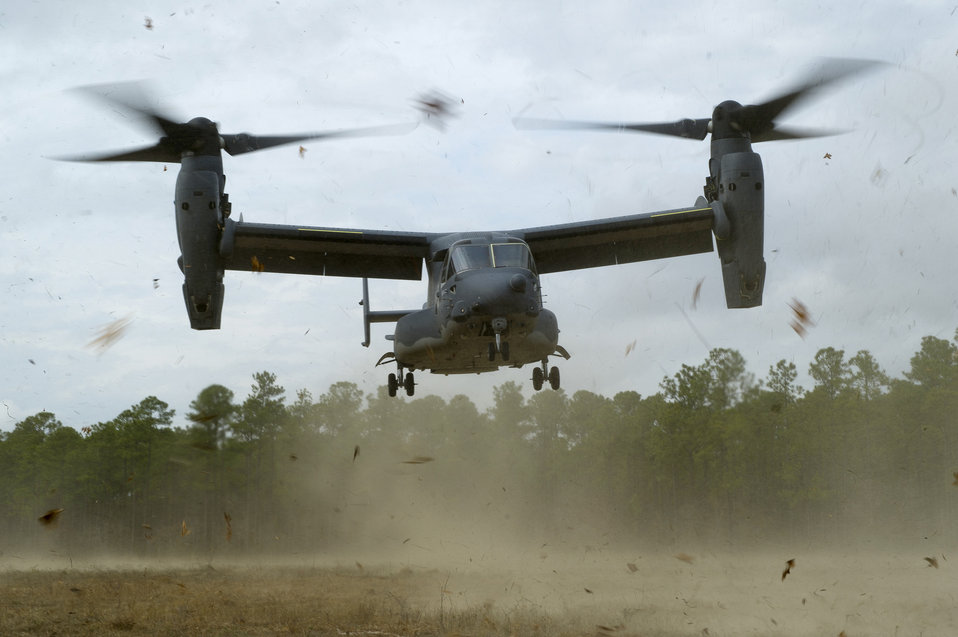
Osprey rising

Airmen assigned to the 8th Special Operations Squadron take off in a CV-22 Osprey during a training mission Feb. 1, 2011, at Hurlburt Field, Fla.